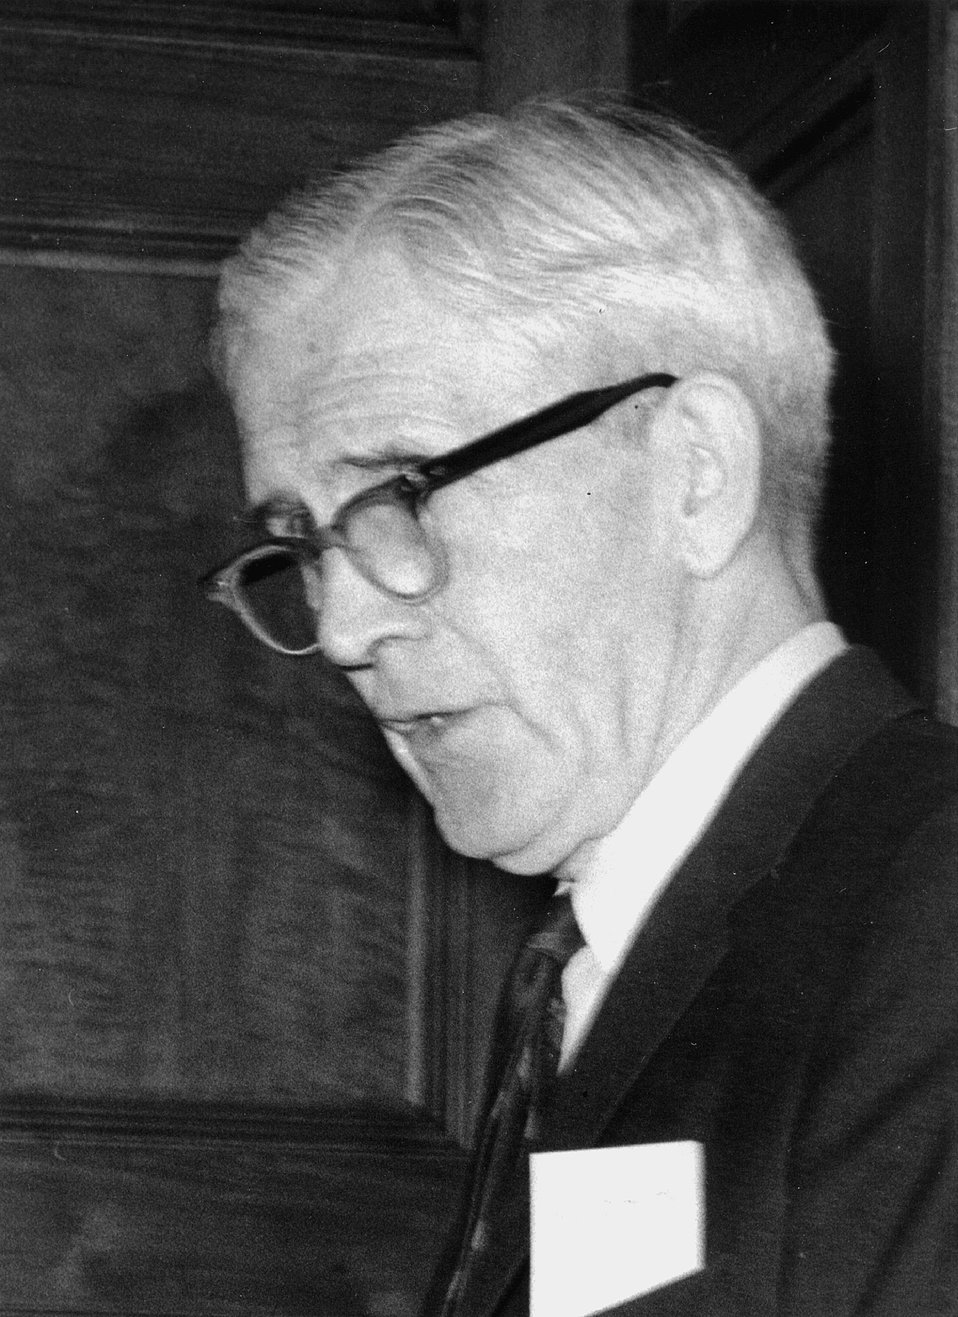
Henry DeWolfe Smythe. c. undated